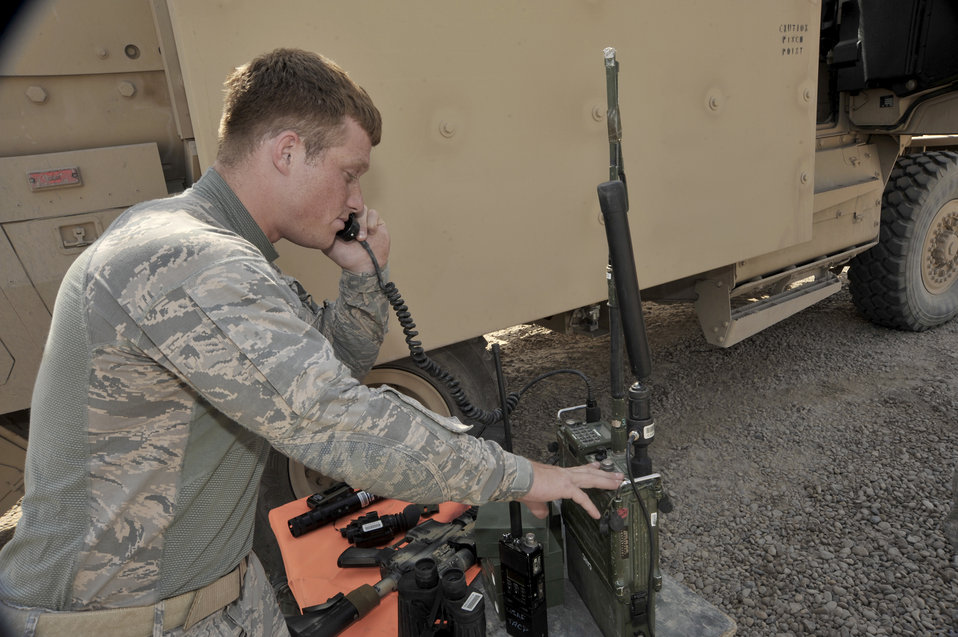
Airmen assist Army ground movements in Iraq

Senior Airman Donald McKee checks the operation of a radio Aug. 3, 2010, at Camp Liberty, Iraq. Tactical air control party Airmen are performing pre-combat checks and inspections, in preparation for supporting the Responsible Drawdown of Forces mission, the goal of which is to bring the number of operational forces down to 50,000 servicemembers. Airman McKee is an 82nd Air Support Operations Squadron, Det. 2 joint terminal attack controller.